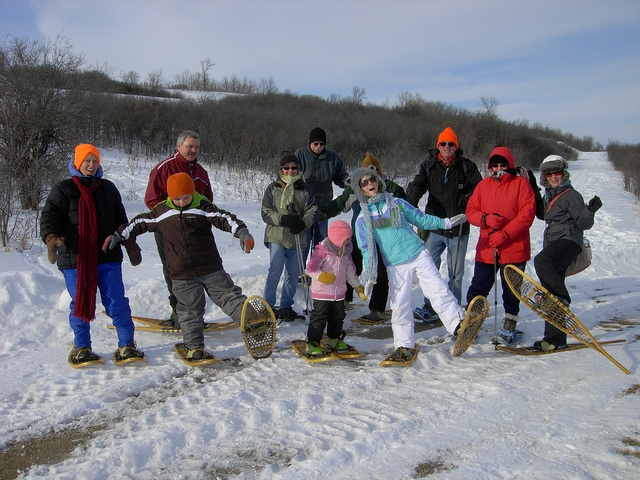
Snowshoers

At Des Lacs Refuge, ND, January 2011.